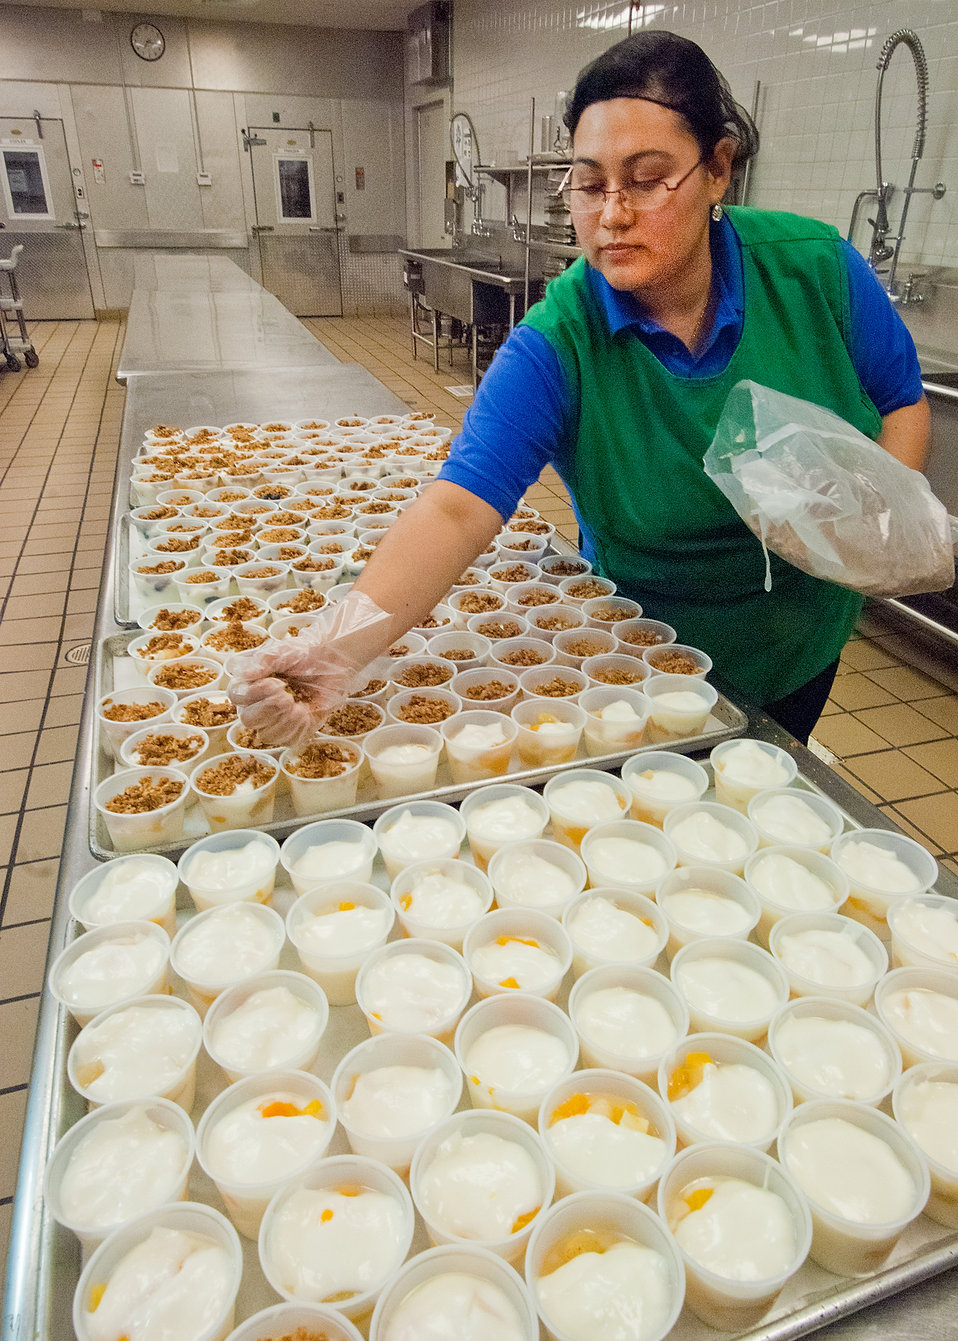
Rosalba Gomez, Arlington Food Services prepares parfait cups with yogurt, fruit and granola in the kitchen at Washington-Lee High School in Arlington, Virginia, on Wednesday, October 25, 2011. The National School Lunch Program is a federally assisted meal program administered by the United States Department of Agriculture, Food and Nutrition Service operating in public, nonprofit private schools and residential child care institutions. It provides nutritionally balanced, low-cost or free lunches to children each school day.